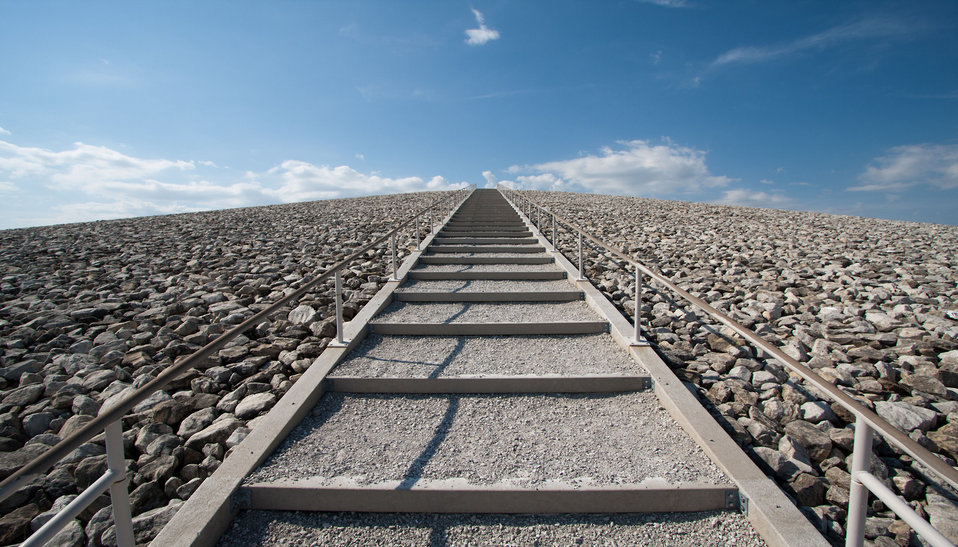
1

Weldon Spring